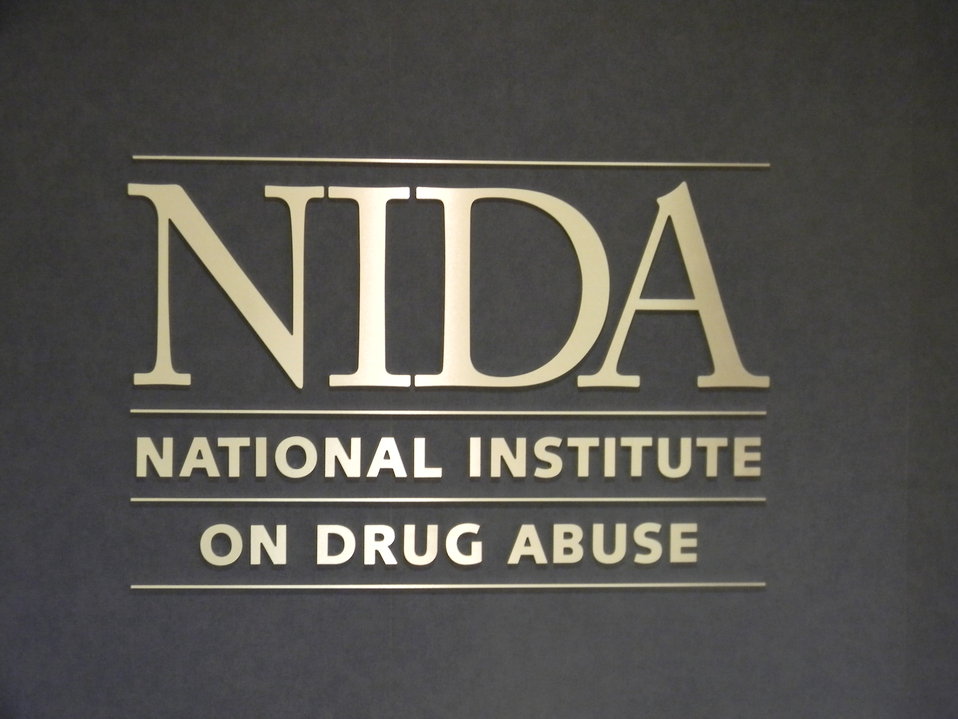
NIDA signage